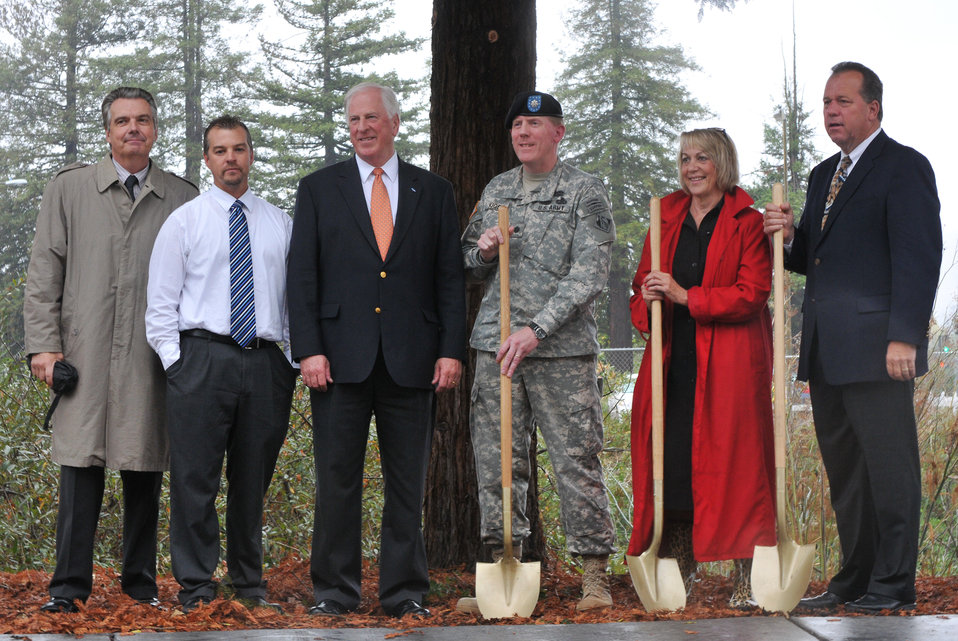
Groundreaking ceremony for the Napa Creek flood risk reduction project

NAPA, Calif. (Oct. 22, 2010) - U.S. Rep. Mike Thompson (third from left) joined (from left) U.S. Army Corps of Engineers Sacramento District project managers Bert Brown and Dave Cook, Sacramento District deputy commander Lt. Col. Andrew Kiger, Napa Mayor Jill Techel and Napa Flood Control and Water Conservation District Supervisor Bill Dodd at a groundbreaking ceremony for the Napa Creek flood risk reduction project here Oct. 22. The $14.8 million project, funded by the American Recovery and Reinvestment Act of 2009, is a joint effort of the Corps, the city of Napa, and the Napa Flood Control and Water Conservation District, to reduce flood risk for Napa, Calif.